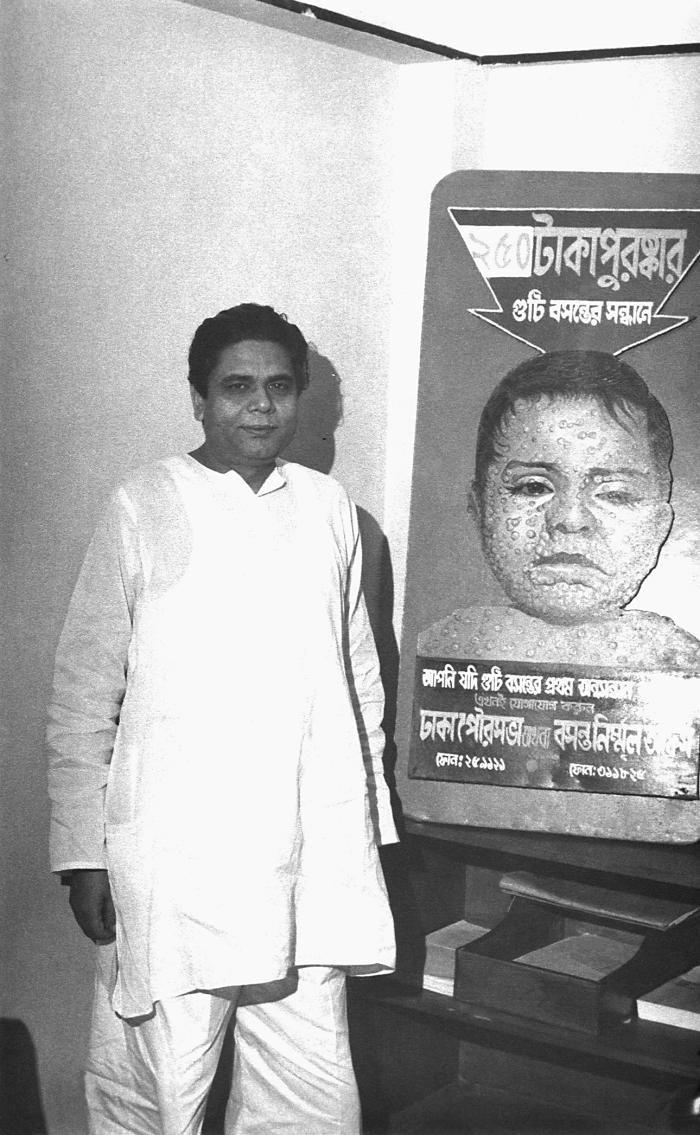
Though his name is unknown, this 1975 photograph depicted one of the Bangladesh Secretaries of Health, as he was standing in front of one of the posters informing viewers of the 250 Taka reward paid to those who'd reported a confirmed case of smallpox to the local eradication team public health authorities. Early on during the eradication campaign, the reward was 50 Taka, but as the campaign turned up fewer, and fewer cases, the reward grew to 250 Taka.The Taka is the official currency of Bangladesh, and is produced in 8 different denominations. The last known case of naturally occurring smallpox, a young girl named Rahima Banu, was reported by an 8 year old girl, who was paid her 250 Taka reward. All rewards were handed out in a public place.